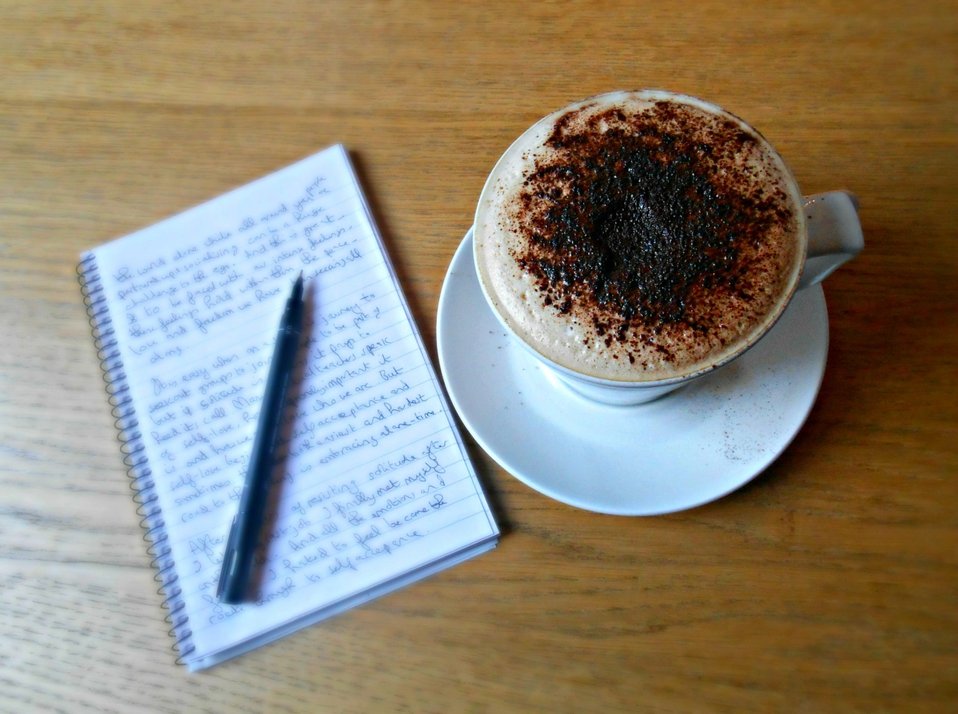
Writers desk with cappuccino

Cappuccino with notebook and pen, a writers desk.